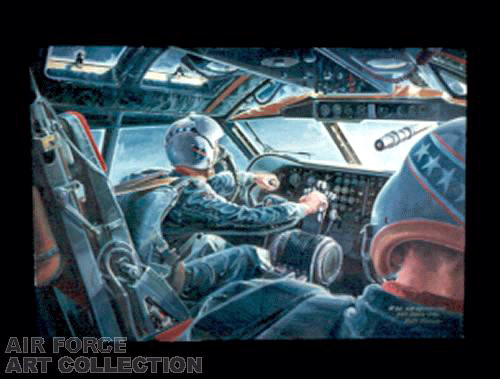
Heritage to Horizons: Air Force documents history through art

This painting entitled